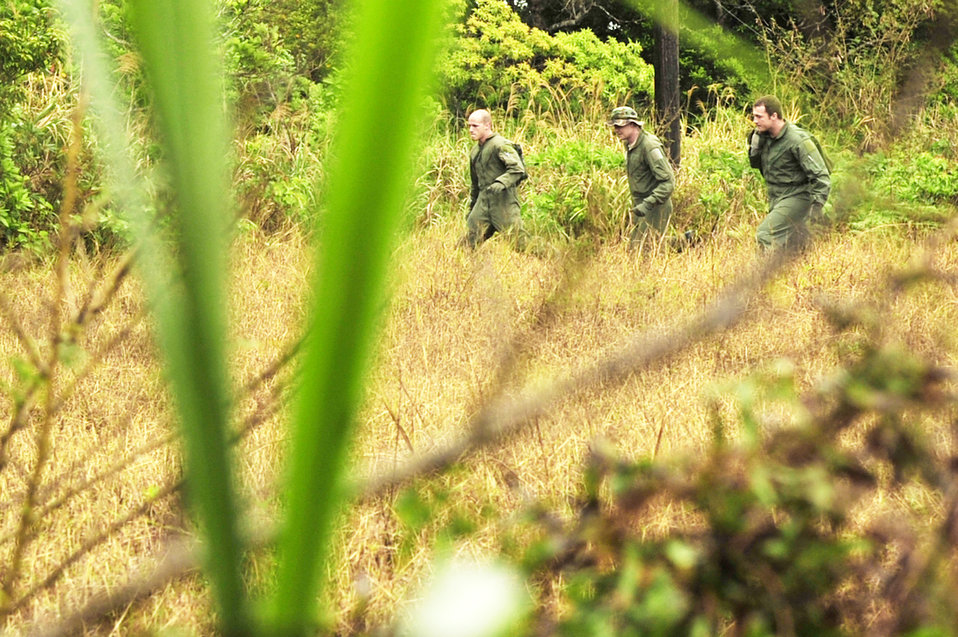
Survival and Evasion Training

First Lt. Joseph Bisson (left to right), Tech. Sgt. Michael Ingram and Capt. Aaron Wallace scout for cover while evading